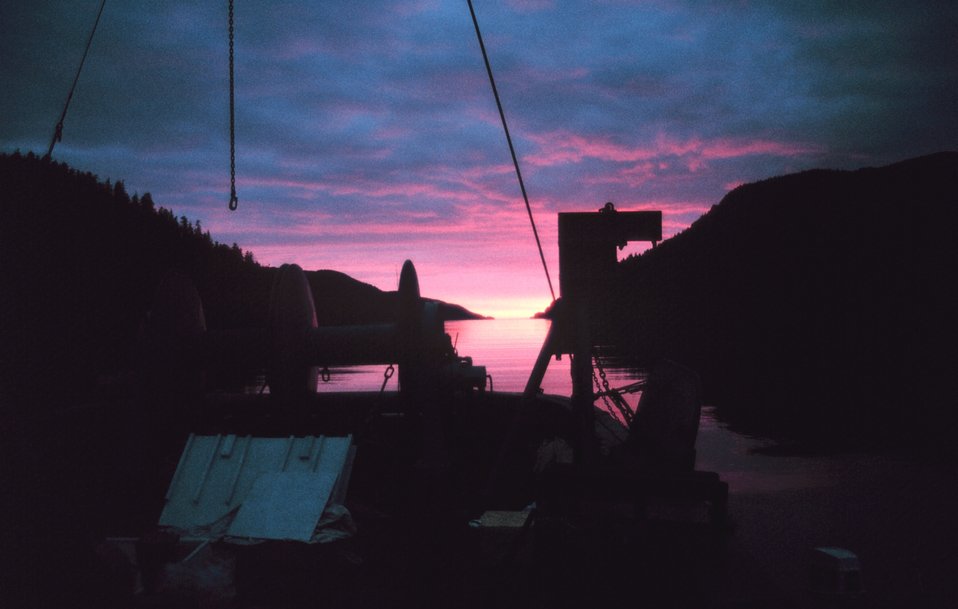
Sunset in St. John Baptist Bay